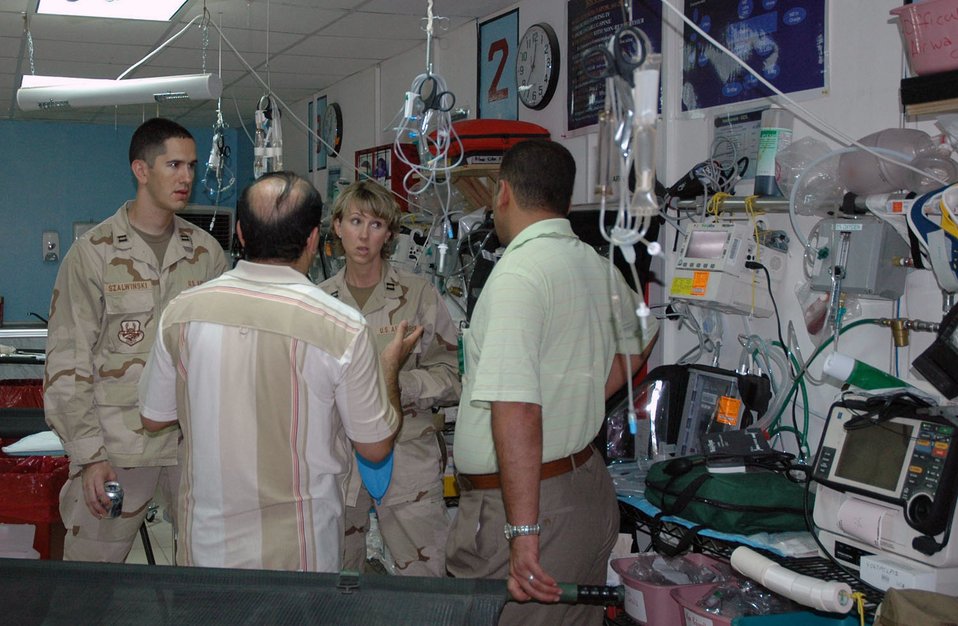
Medical symposium strengthens ties in Kirkuk

Capts. Bryan Szalwinski and Donna Strait chat with two local Iraqi physicians July 22 during a tour of the emergency room at the Kirkuk Air Base, Iraq, hospital. The tour was part of a medical symposium that brought eight Iraqi physicians from downtown to the base to meet with about 20 U.S. Air Force and Army medical providers. The captains are assigned to the 506th Expeditionary Medical Squadron.